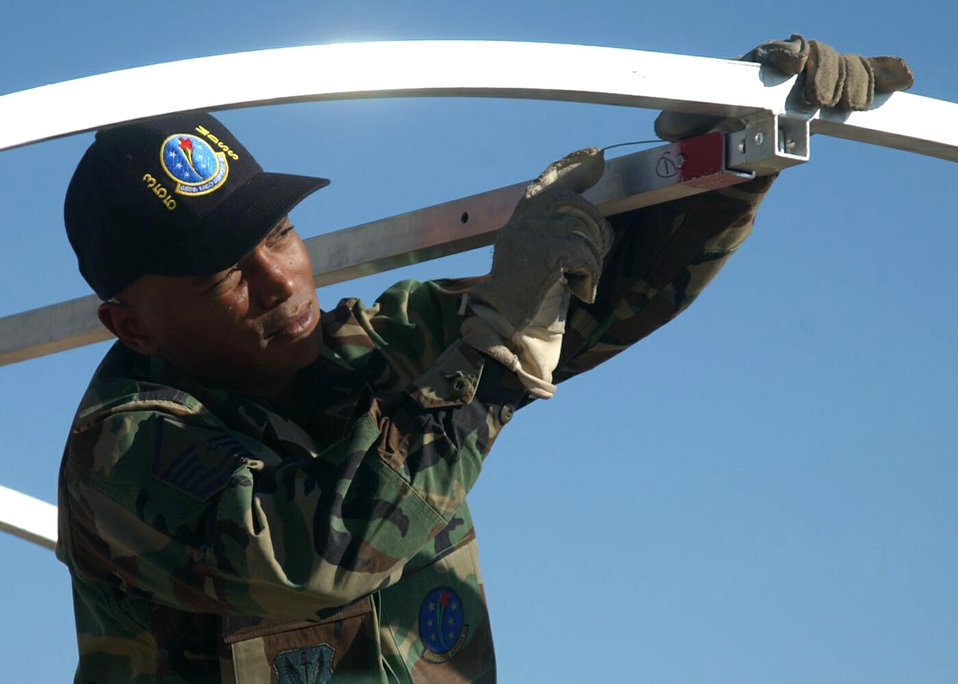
A tents situation

DAVIS-MONTHAN AIR FORCE BASE, Ariz. -- Master Sgt. James Green helps erect an Alaskan shelter that is used for patient care at deployed locations. Airmen train like this quarterly to prepare for deployment. Sergeant Green is the superintendent of the 355th Medical Support Squadron here.